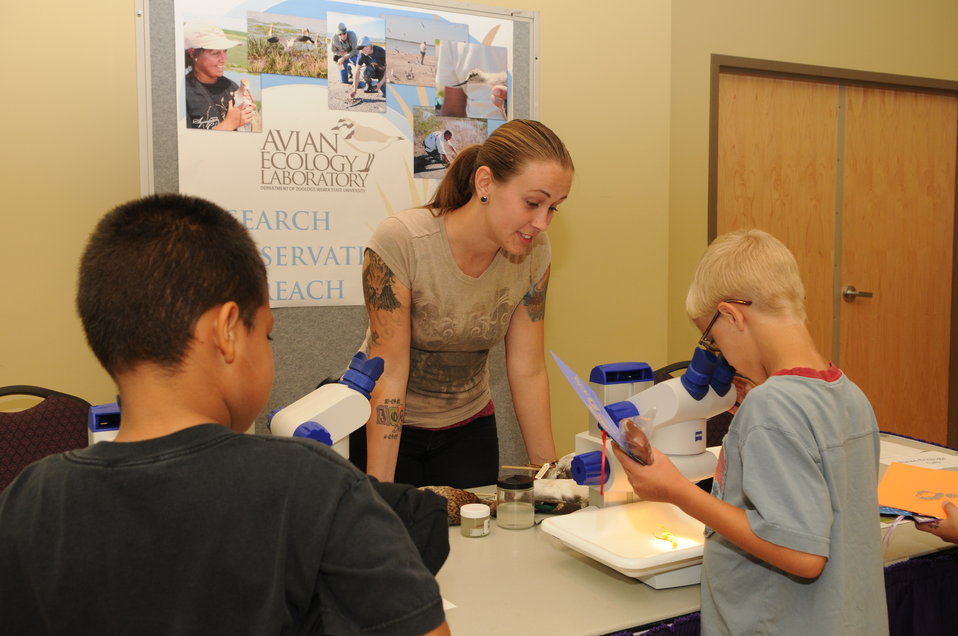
Youth Outreach

The U.S. Fish & Wildlife Service sponsored the 2012 Federal Duck Stamp Art Contest September 28 and 29 in Ogden, Utah, at Weber State University. A panel of five judges was responsible for choosing the art work used to design the 2013-2014 Migratory Bird Hunting and Conservation Stamp.